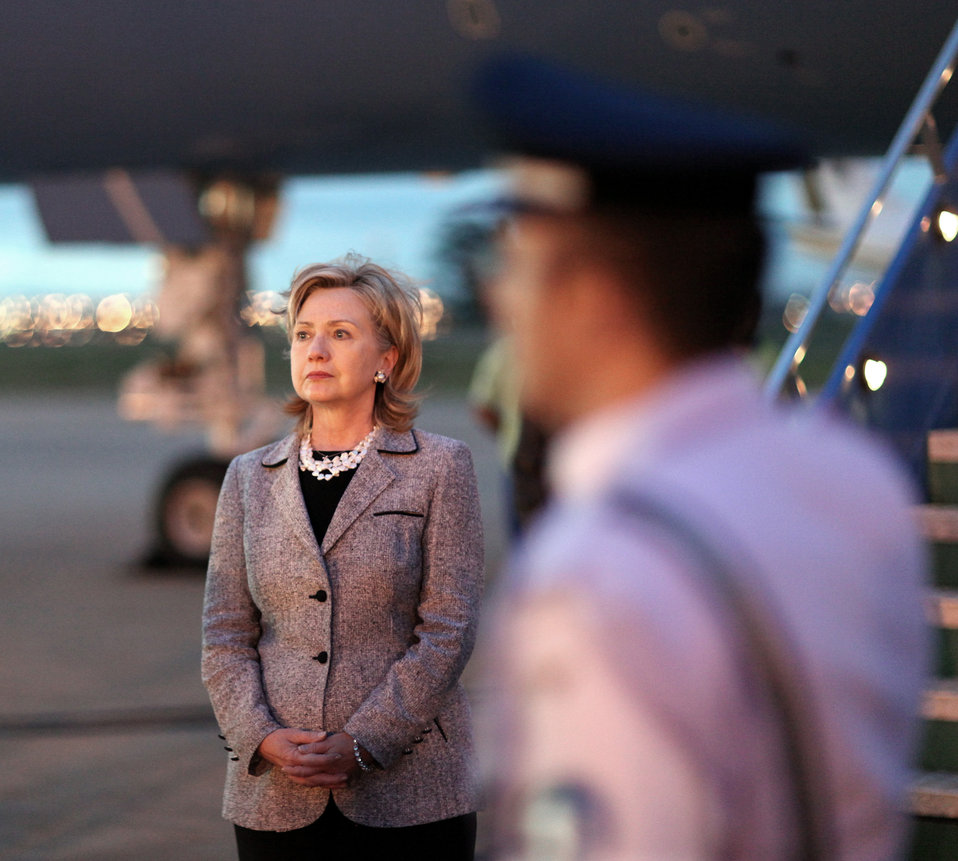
Secretary Clinton 'Wheels Down' in Brazil

U.S. Secretary of State Hillary Rodham Clinton arrives in Brasilia, Brazil March 2, 2010.